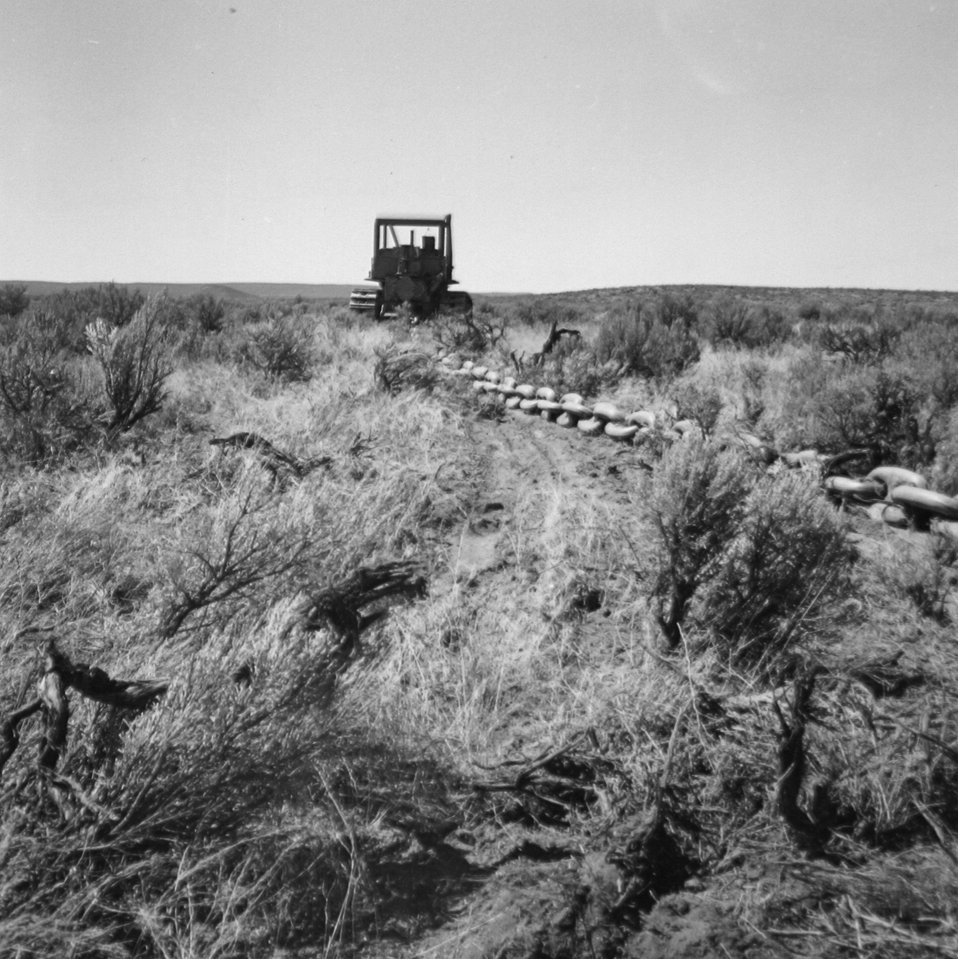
8-17-60 Howard R. DeLano Chaining operation- D8 on one end of chain south of sod house Burns Grazing District